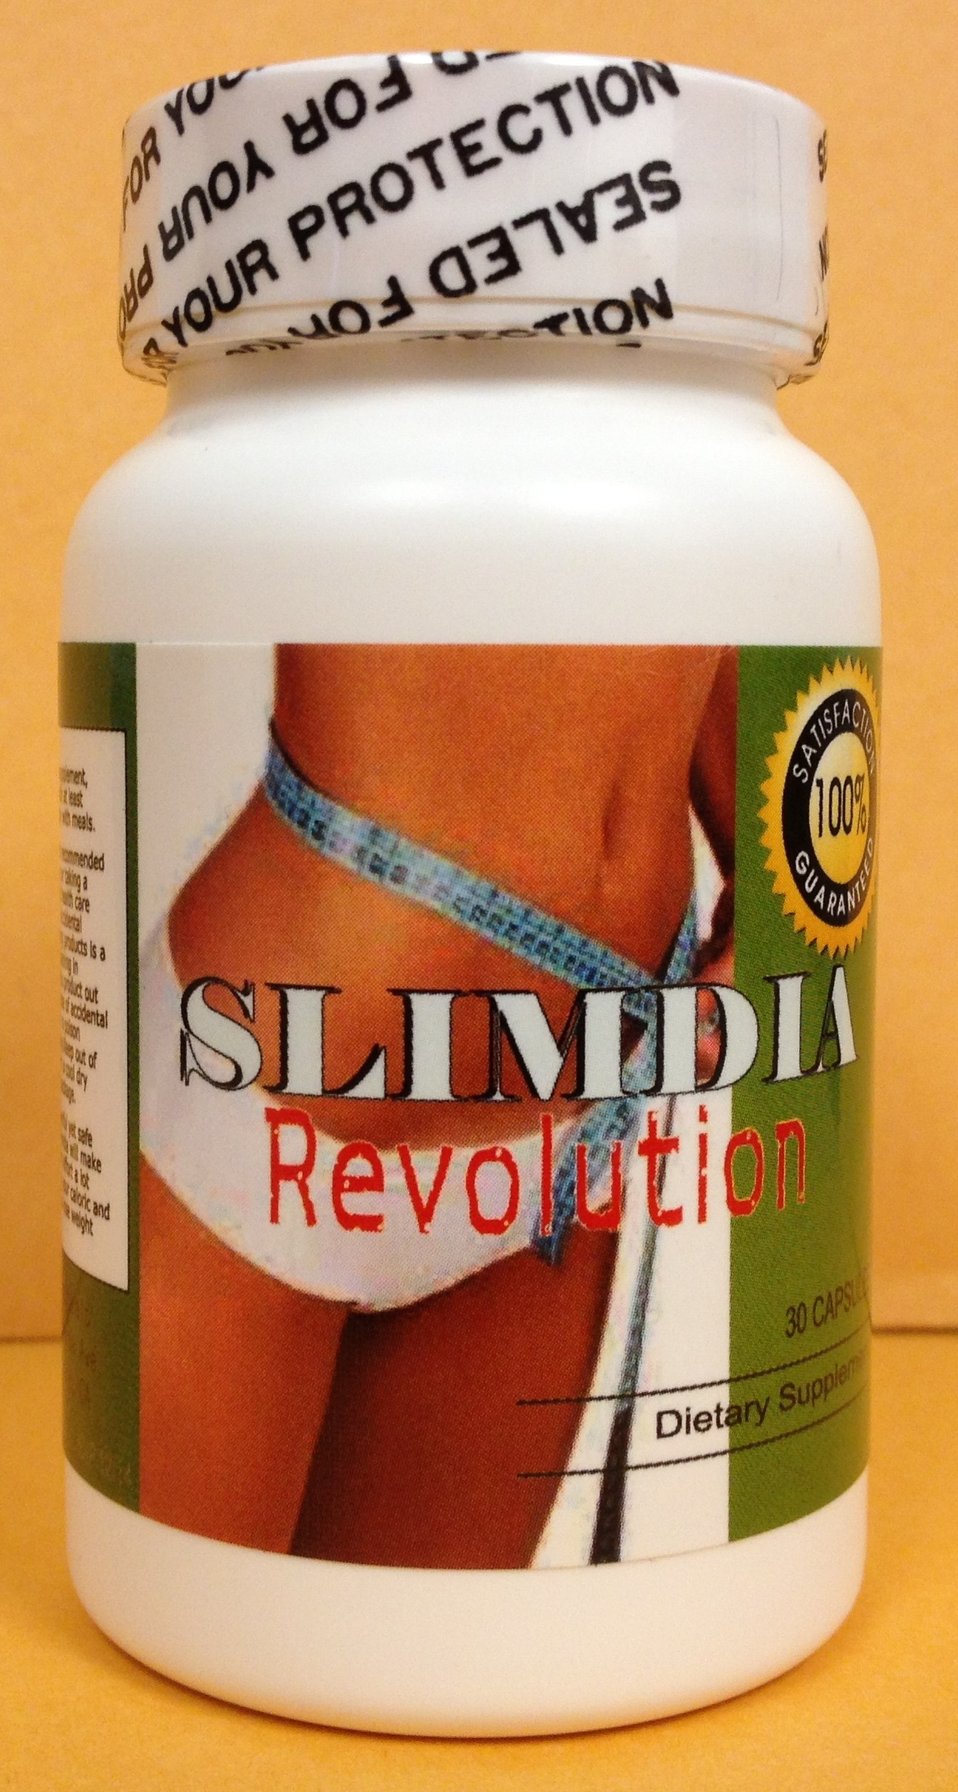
Slimdia Revolution

December 19, 2012 - The FDA is advising consumers not to purchase or use 'Slimdia Revolution,' a product promoted and sold for weight loss. The product was found to contain undeclared sibutramine. For more information, go to www.fda.gov/Safety/Recalls/ucm333178.htm

And read this Consumer Update: Beware of Fraudulent ‘Dietary Supplements’